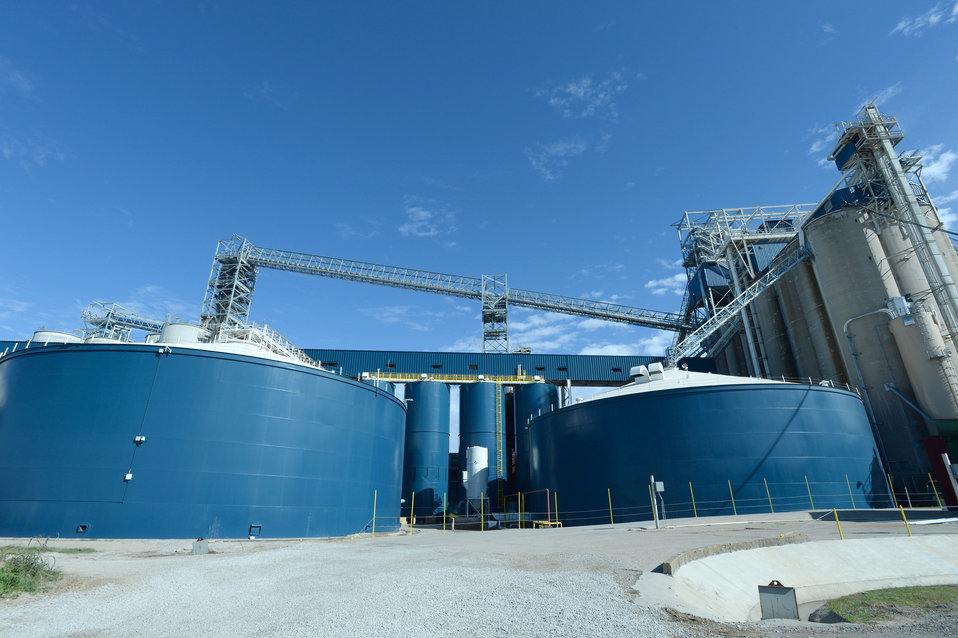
Grain is transferred from barges to holding tanks and tested in preparation for export near the port of New Orleans, LA on Tuesday, Nov. 19, 2013.